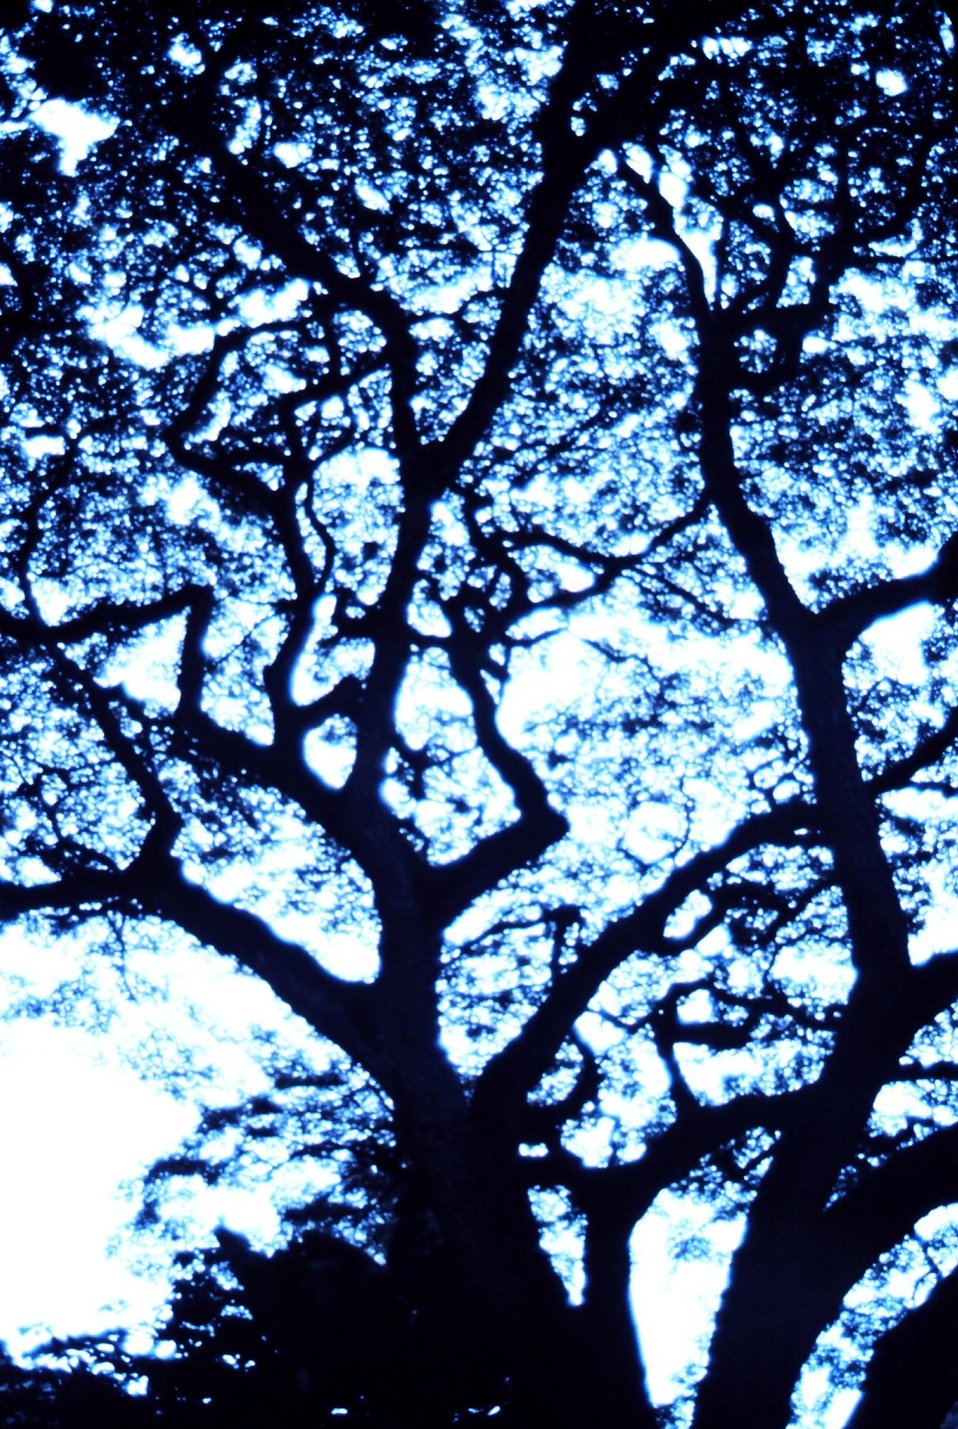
Looking up through a large banyan tree